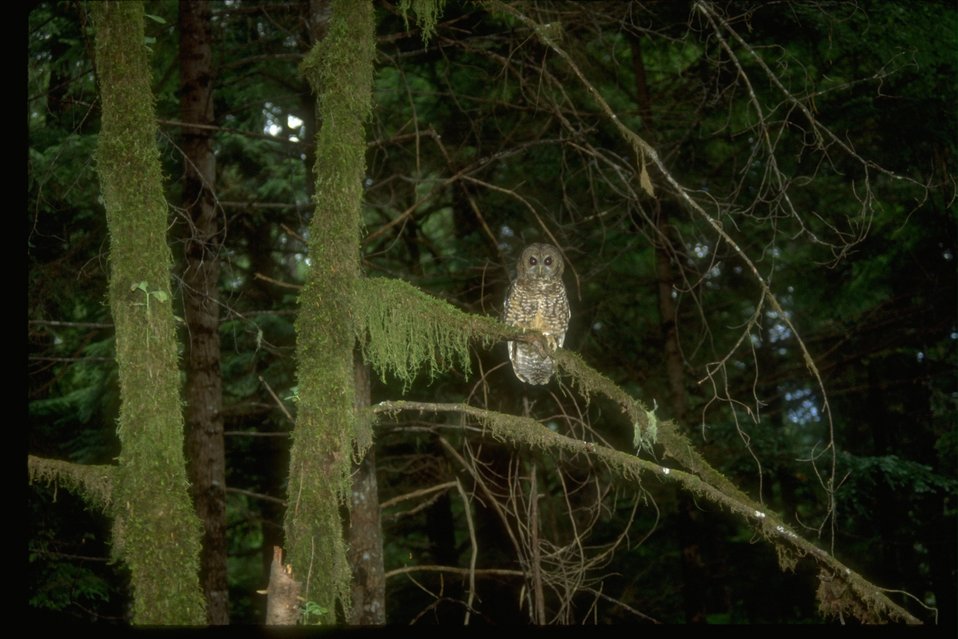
A Northern Spotted Owl perched on a tree branch.